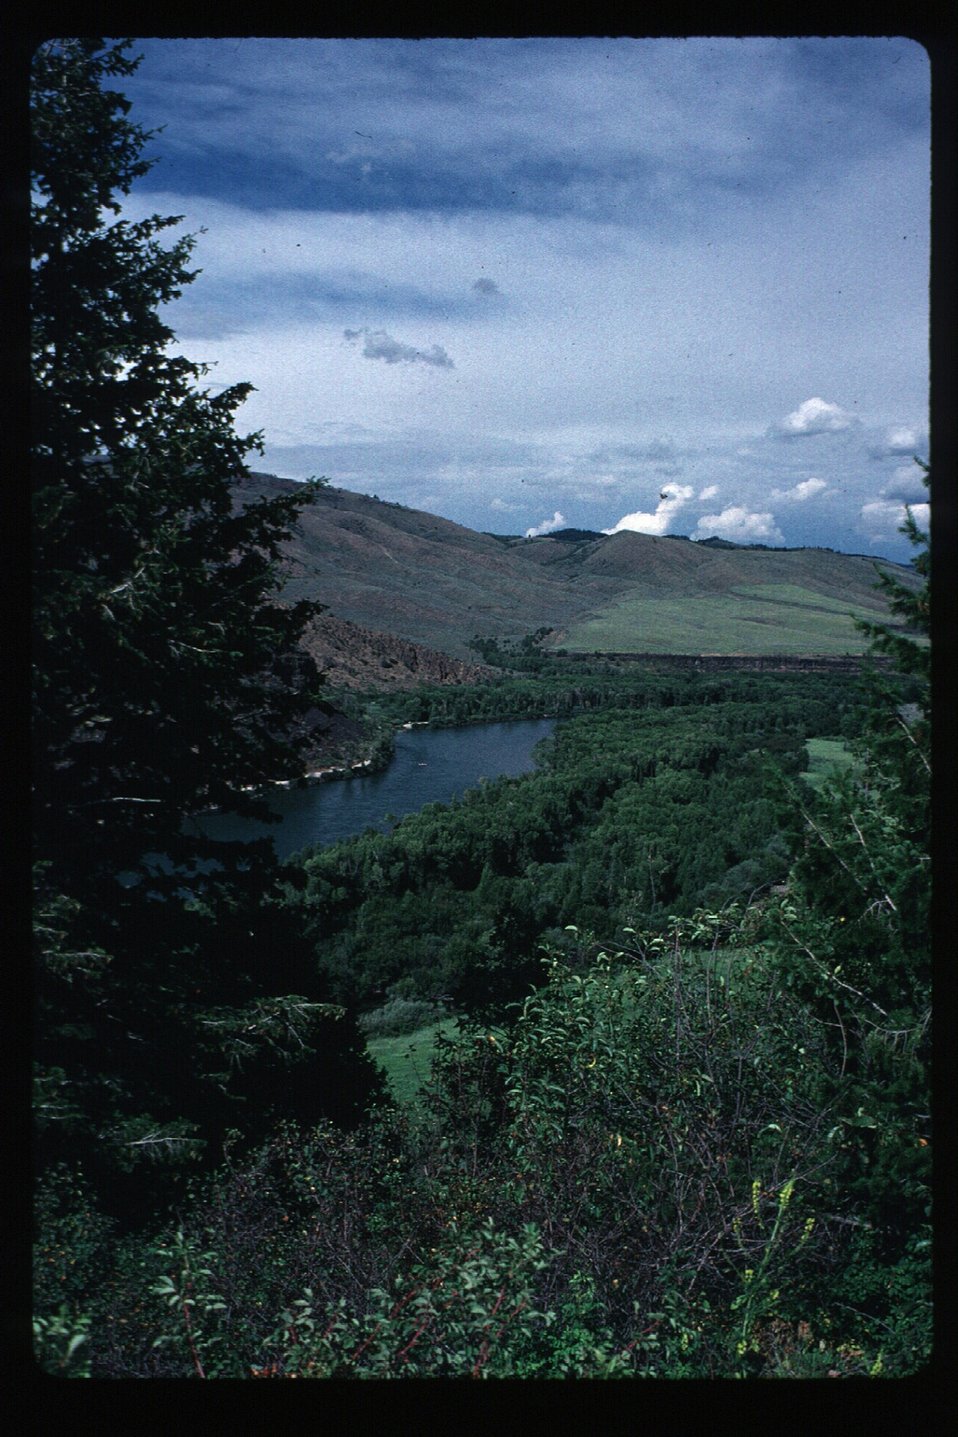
South Fork of Snake River Scenic Idaho Falls Field Office USRD Upper Snake River District